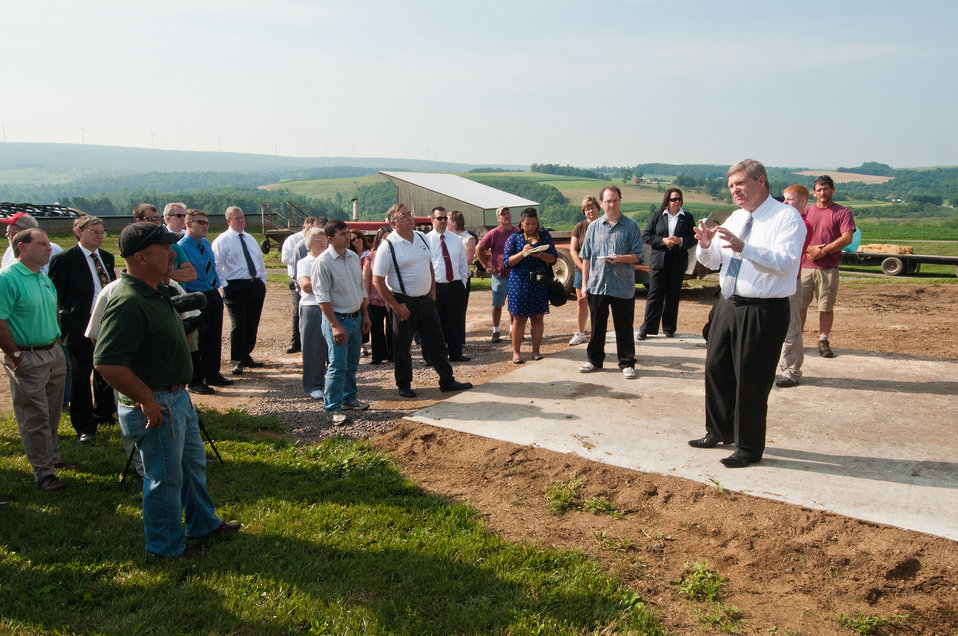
Agriculture Secretary Tom Vilsack visited Pennwood Dairy Farms in Berlin, PA on Tuesday, July 17, 2012. During his visit Secretary Vilsack highlighted the U.S. Department of Agriculture’s (USDA) energy efficiency programs and announced a new effort to help rural consumers make affordable, energy-efficient improvements to their homes and businesses. He also discussed the economy of rural America, the drought and the next Farm Bill.